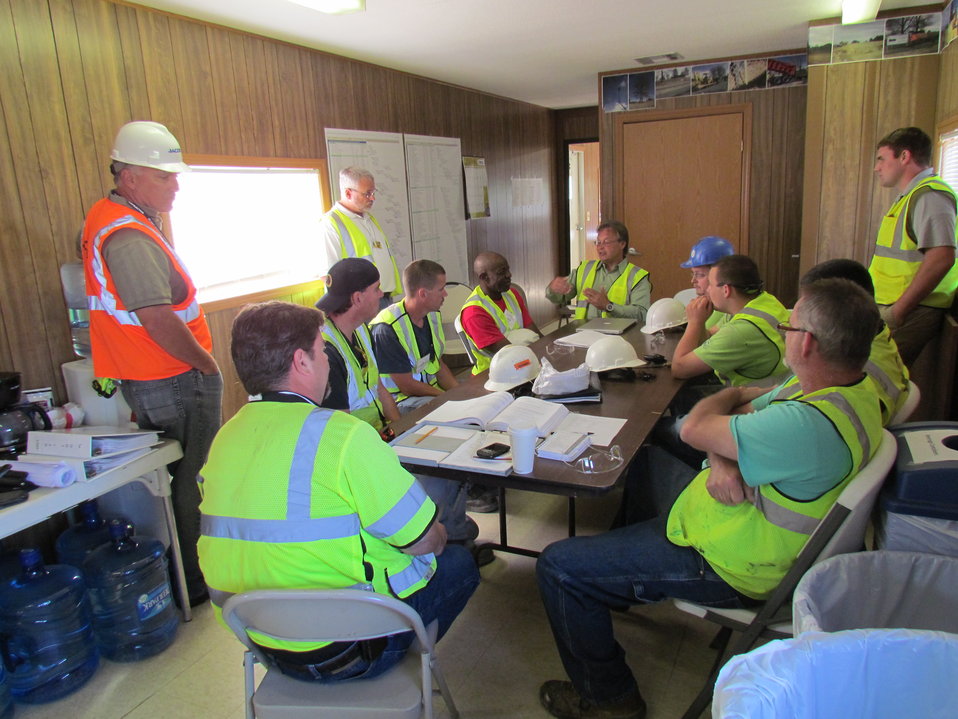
Net-Zero Energy Residential Test Facility - Team that will be installing air/moisture barrier discussing importance of application with Building Science Corporation's engineer.